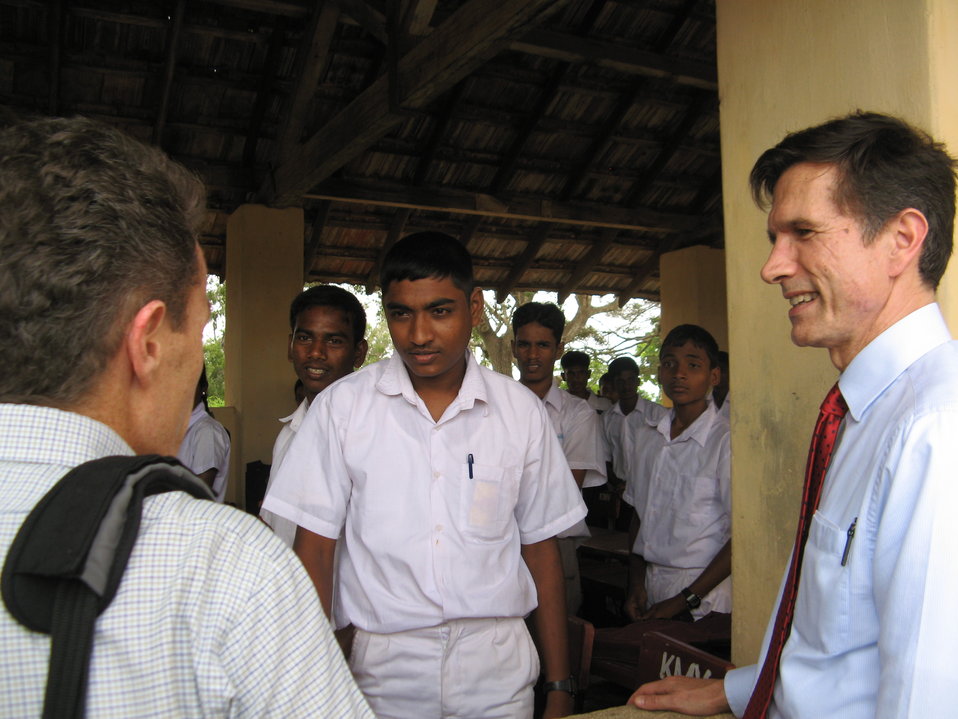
Assistant Secretary Blake Meets With Sri Lankan Students

Assistant Secretary for South and Central Asian Affairs Robert O. Blake speaks with students at a newly opened junior high school in northern Sri Lanka, November 2009.